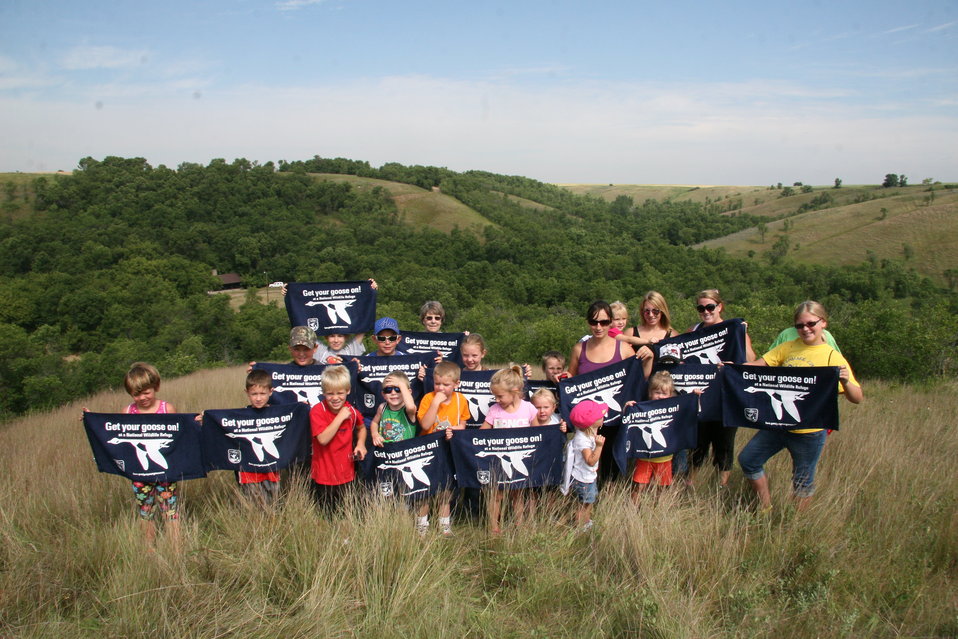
The Kenmare Summer Reading Group Gets Its Goose On at Des Lacs Refuge

The Kenmare Summer Reading Group visits the Refuge every August for their end of year field trip. Participants enjoy a guided nature hike, picnic in the CCC shelter, making bird treats to take home, a scavenger hunt and learning about animals that call Des Lacs Refuge home.